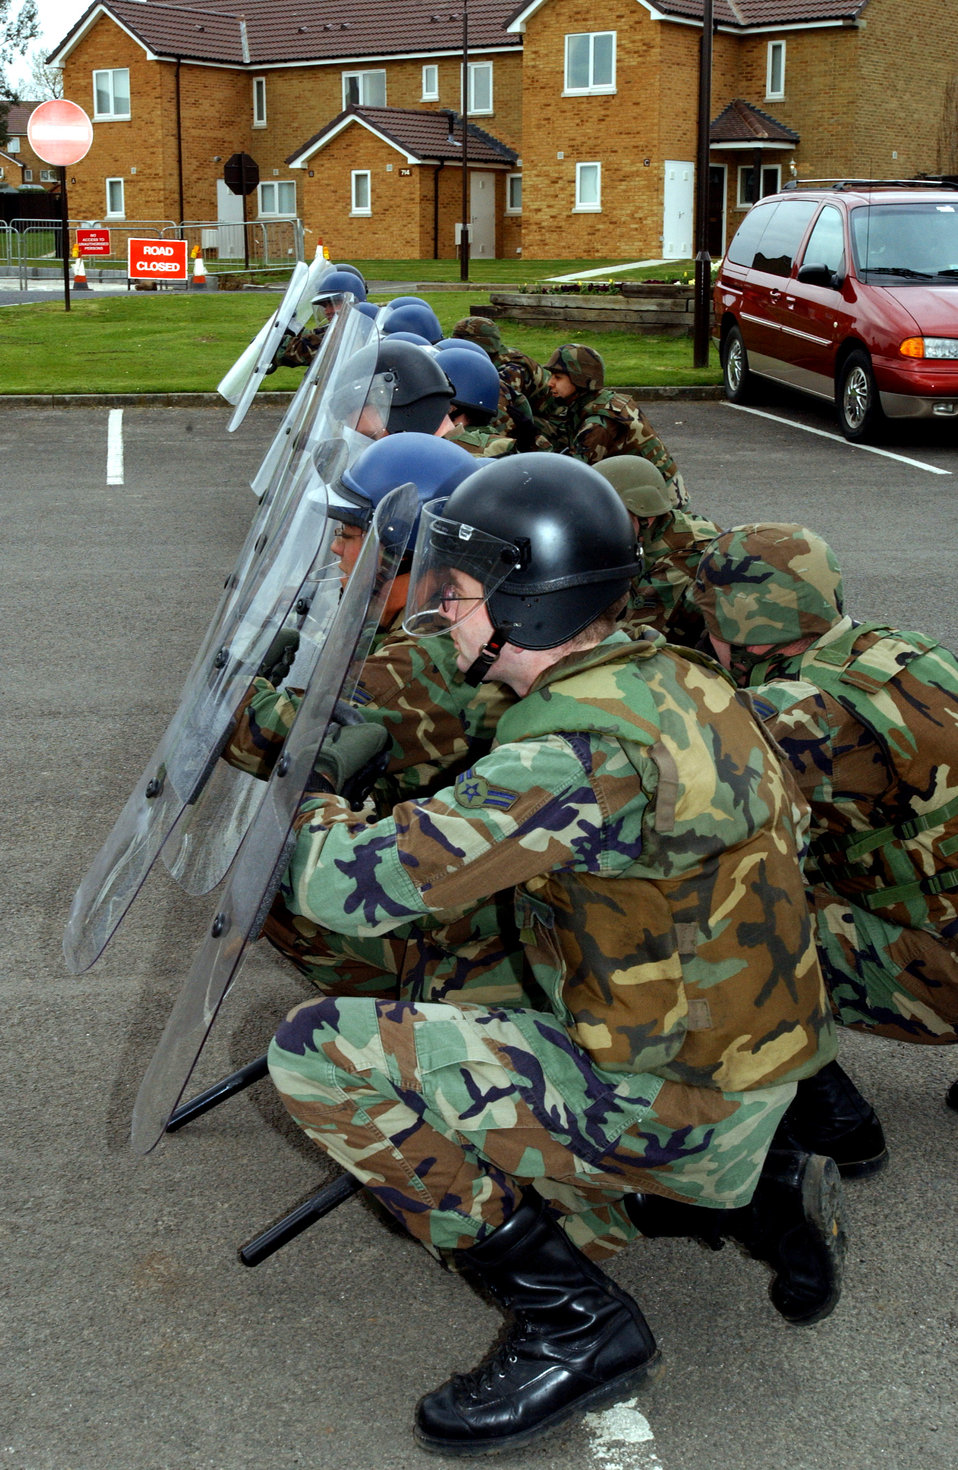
Anger management

ROYAL AIR FORCE FAIRFORD, England - Airmen from the 100th Security Forces Squadron receive training on confrontational management skills here April 8. The training emphasizes the importance of riot control. The 100th SFS is from Royal Air Force Mildenhall, England.